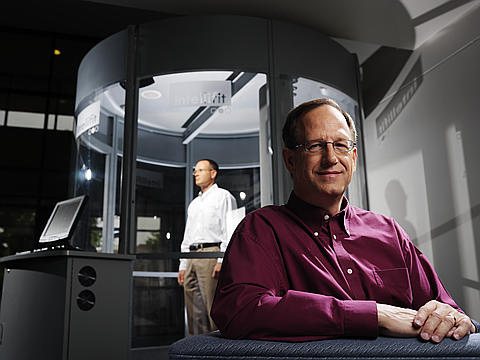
Pacific Northwest National Laboratory researchers develop technologies that solve multiple challenges, such as the first-of-its-kind holographic millimeter wave scanner that is being used for security applications as well as in the clothing industry.